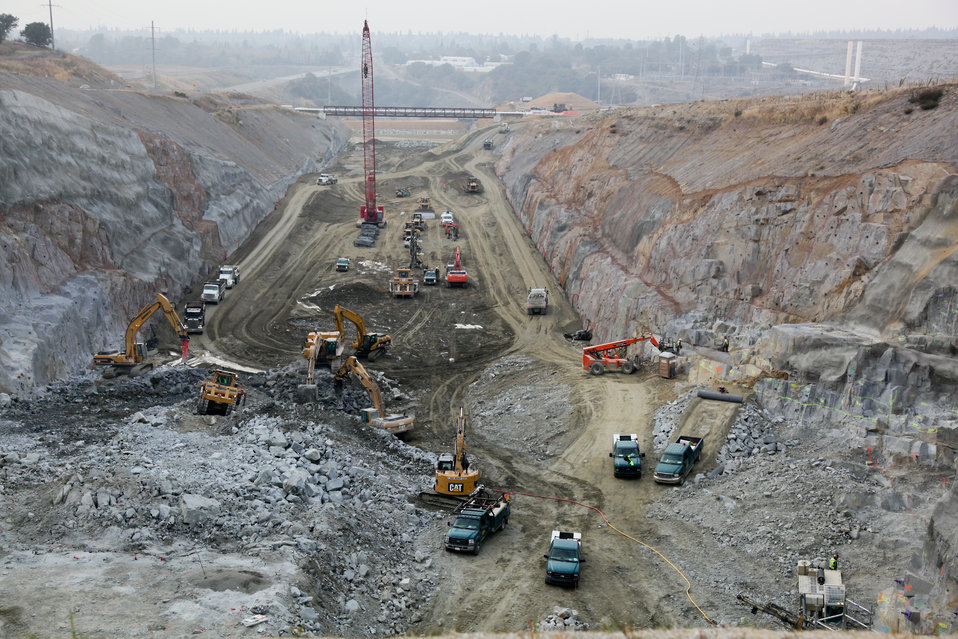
Excavation and rock reinforcement continues at Folsom Joint Federal Project

Excavation of Folsom Dam’s new auxiliary spillway continues in Folsom, Calif., Dec. 29, 2011. The spillway will allow Folsom Dam to release water sooner and more safely. The project is part of the Folsom Dam Joint Federal Project, a joint effort of the U.S. Army Corps of Engineers Sacramento District, the U.S. Bureau of Reclamation, the Central Valley Flood Protection Board and the Sacramento Area Flood Control Agency to improve the safety of the dam and reduce flood risk for the greater Sacramento area.